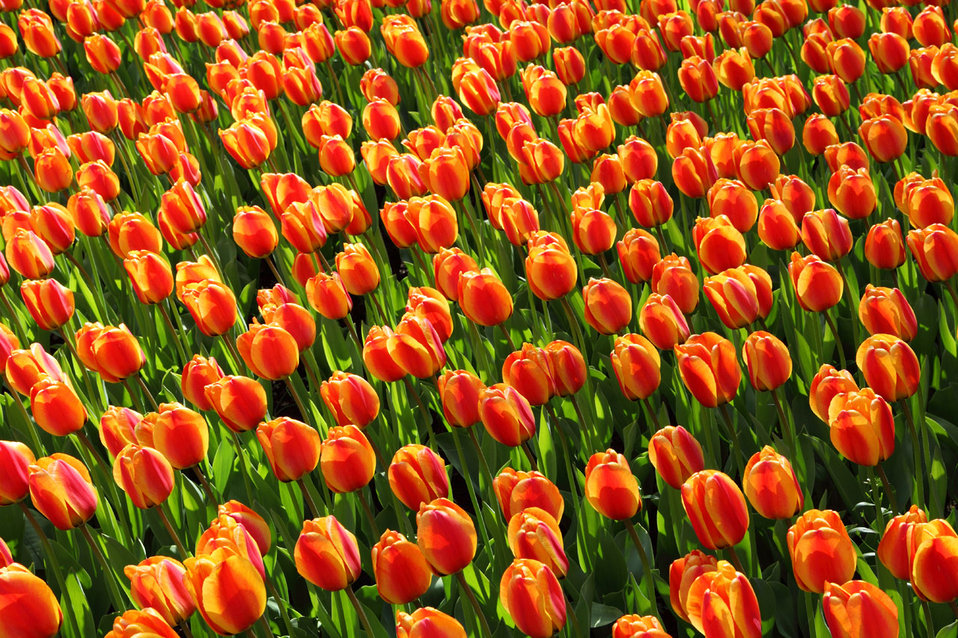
Tulip background

Background image from orange red tulips.